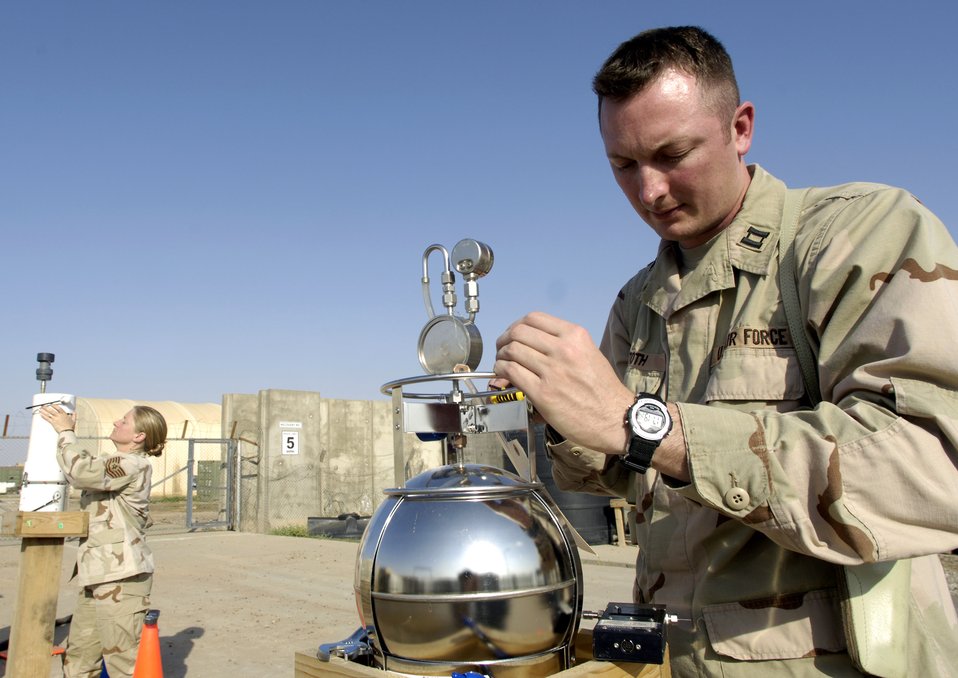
Bioenvironmental engineers keep Airmen safe

Capt. Charles Toth and Tech. Sgt. Melissa Saraiva check monitoring devices for common pesticides and other environmental hazardous chemicals in the air April 13 at Balad Air Base, Iraq.